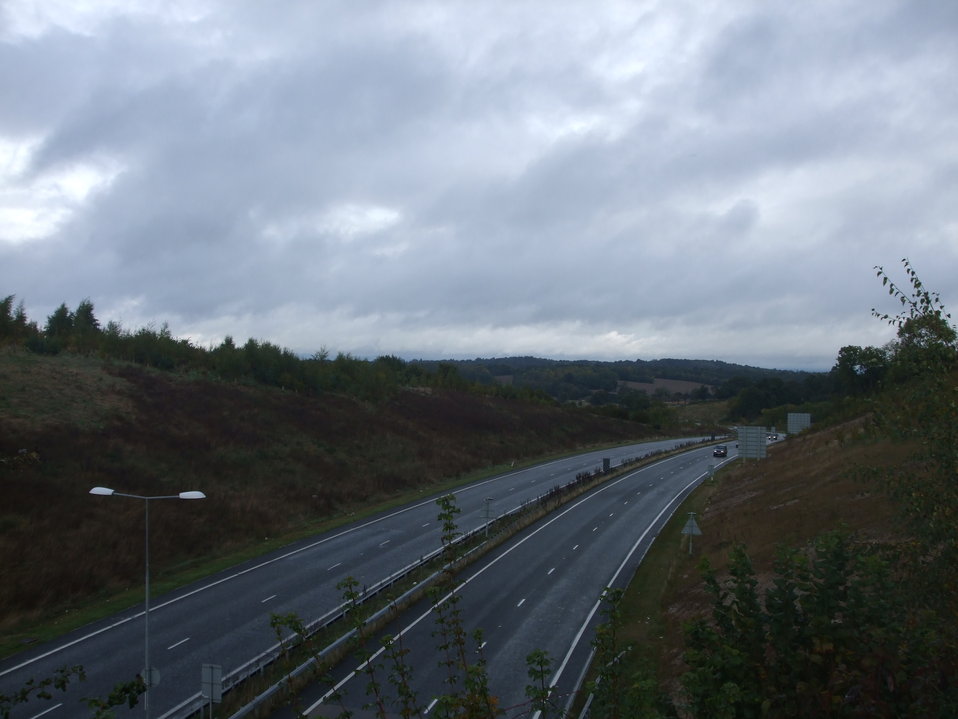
A21 road at Scotney Castle.